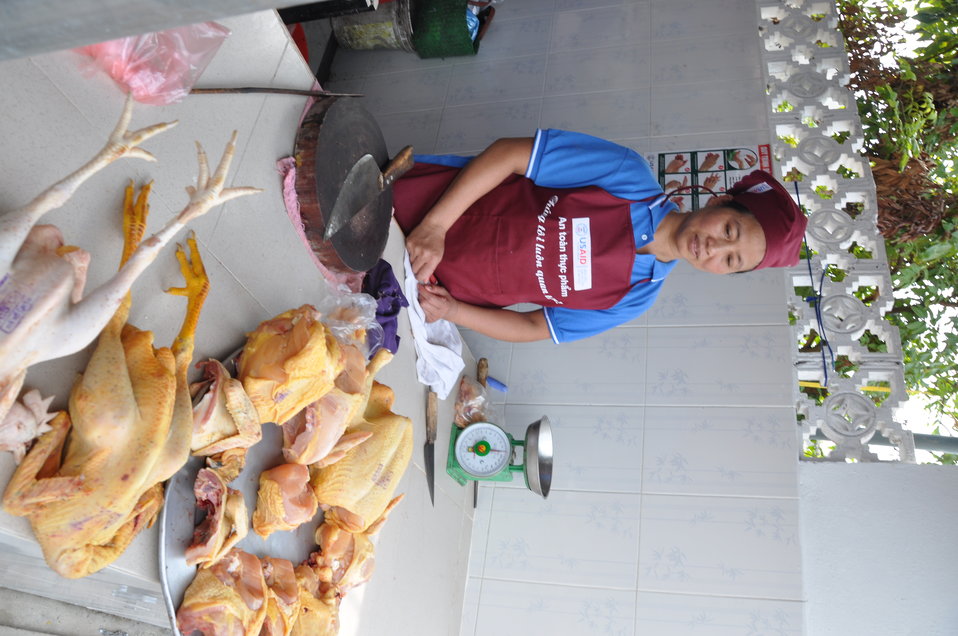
Handover Ceremony Hoa Mac Market, Ha Nam

October 26, 2012 Photo: Richard Nyberg, @USAIDVietnam